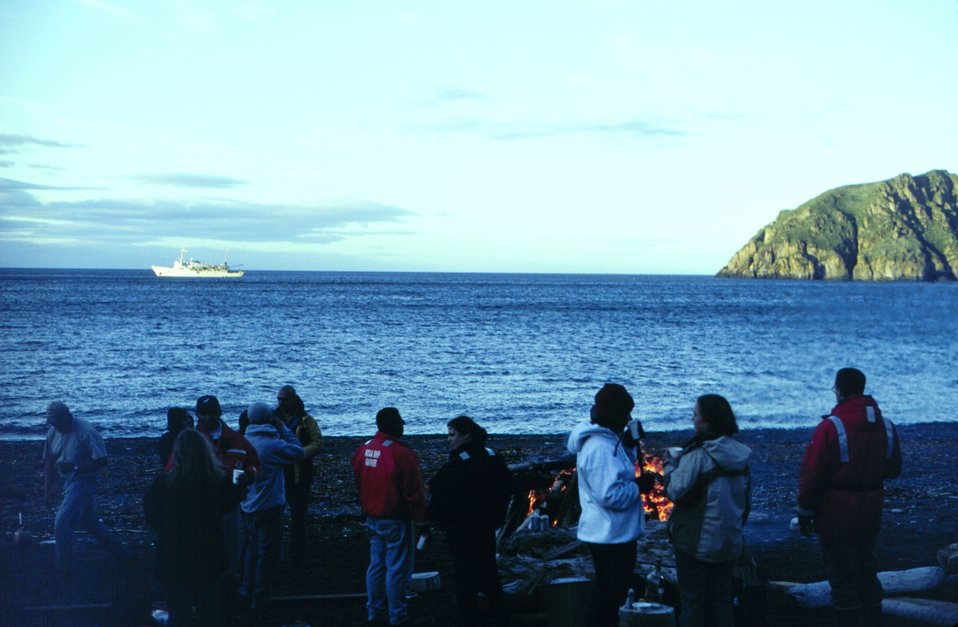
NOAA Ship RAINIER crew beach party at Chowiet Island in the Semidi Island group southwest of Kodiak Island. RAINIER in background.